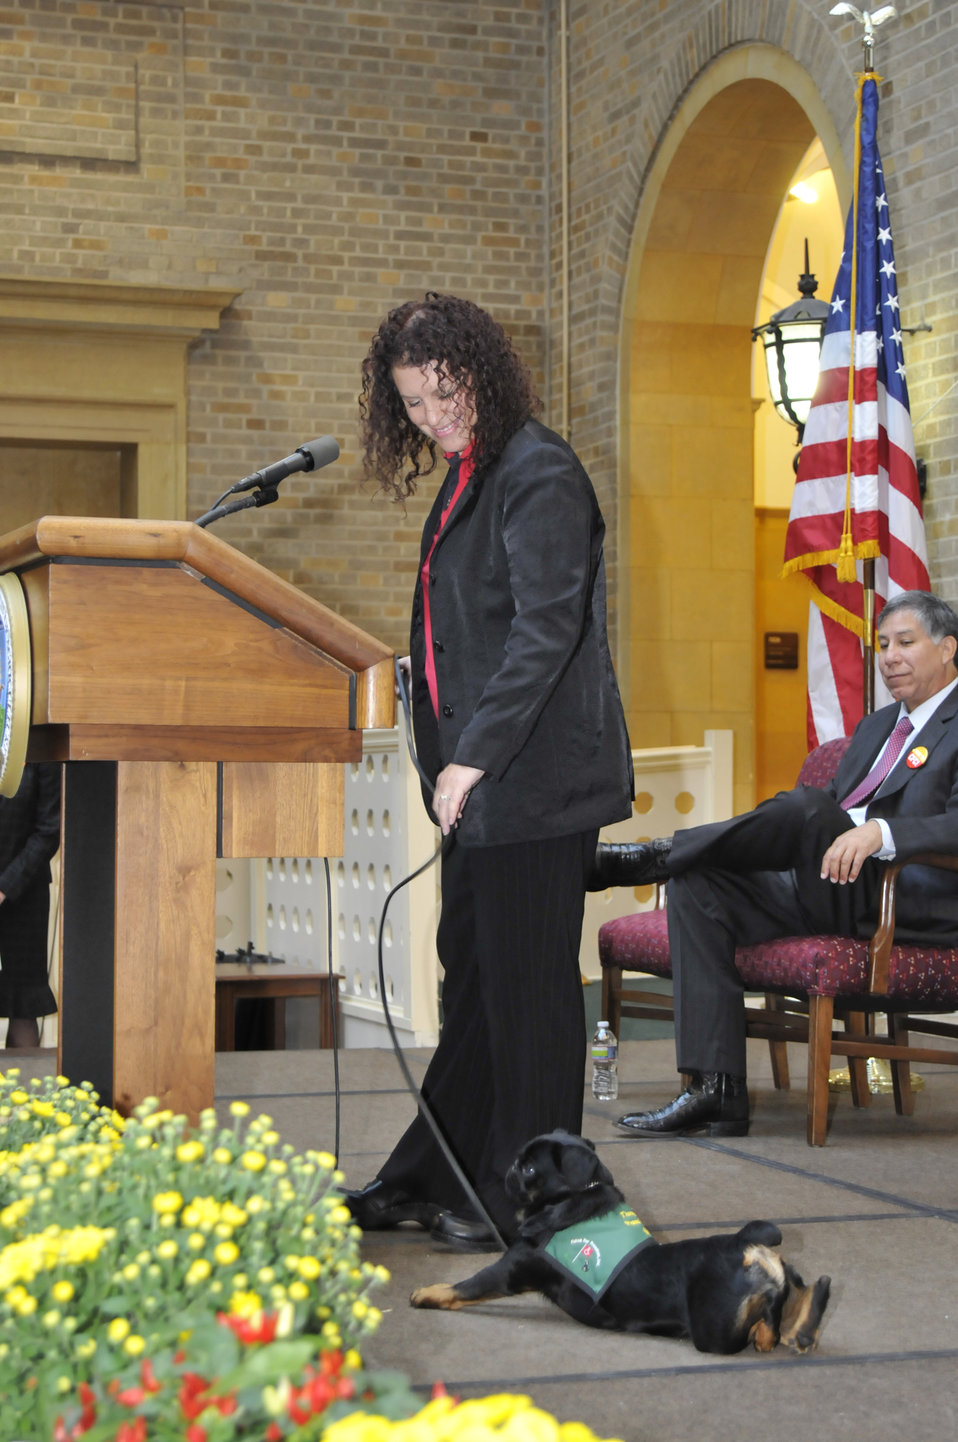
Pam Loeb, Fidos for Freedom Demonstration accompanied by her Brussels Griffon “Cabot”, makes remarks at the opening ceremonies for the 2010 Combined Federal Campaign held on the Patio of the U.S. Department of Agriculture in Washington, DC, on Tuesday, October 12, 2010. USDA Photo 10di1521-0048 by Bob Nichols.